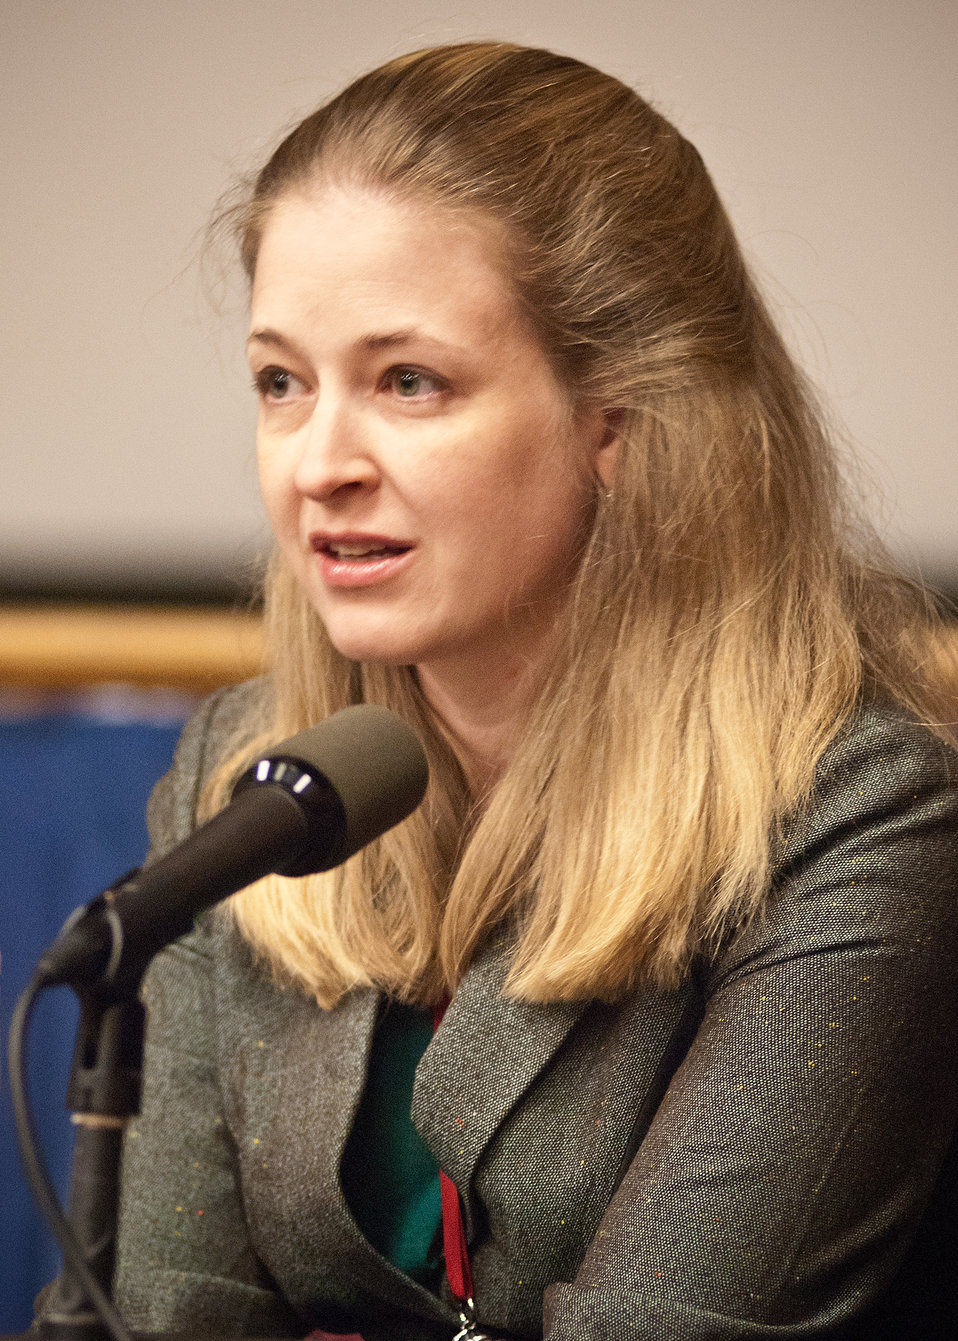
Gari Jo Green, Office of Inspector General a member of the USDA Panel of Success: Hiring and Employing Individuals with Disabilities offers her experience and advice to U.S. Department of Agriculture employees during National Disability Employment Awareness Month event in Washington, DC, on Wednesday, October 5, 2011. Agriculture Secretary Tom Vilsack is dedicated to establishing the USDA as the lead Federal agency in employing individuals with disabilities. The theme for the event is “Profit by Investing in Workers with Disabilities.” USDA is committed to ensuring that all our programs are accessible and inclusive of individuals with disabilities.